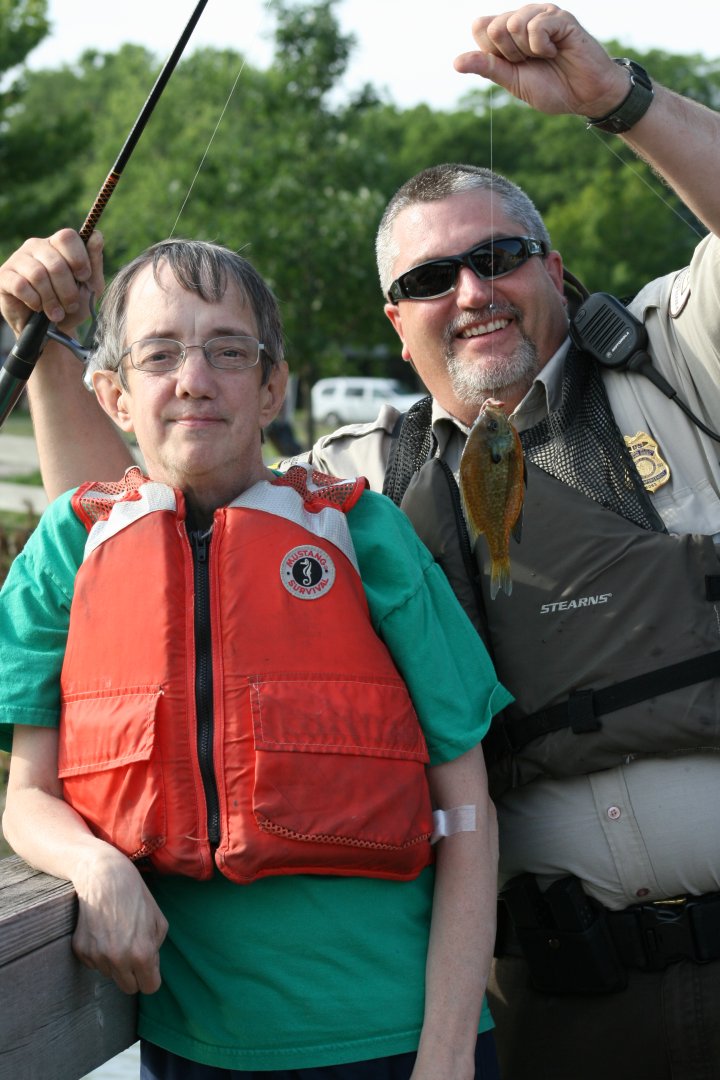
LEO Hirschboeck assists a Project Compass client 2

Refuge Law Enforcement Officer Rob Hirschboeck displays a catch of a Project COMPASS client.